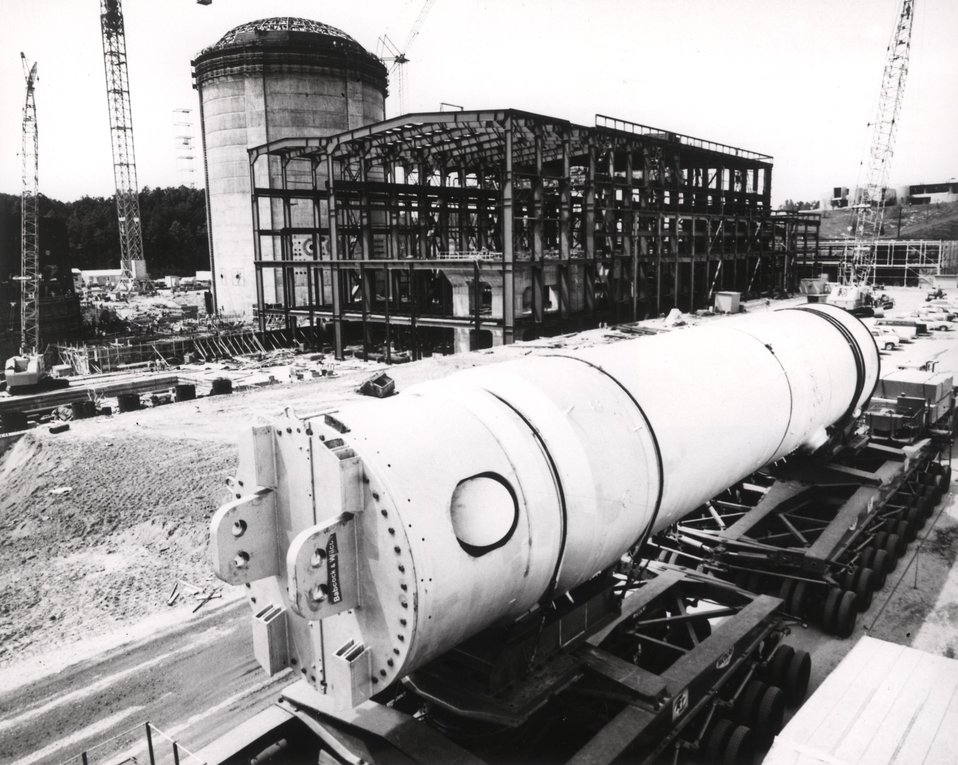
The first major component for the Duke Power Company's Oconee nuclear power station, this 570-ton steam generator was delivered at Oconee aboard a 240-wheel truck capable of carrying a load of 600 tons. Circa 1972.